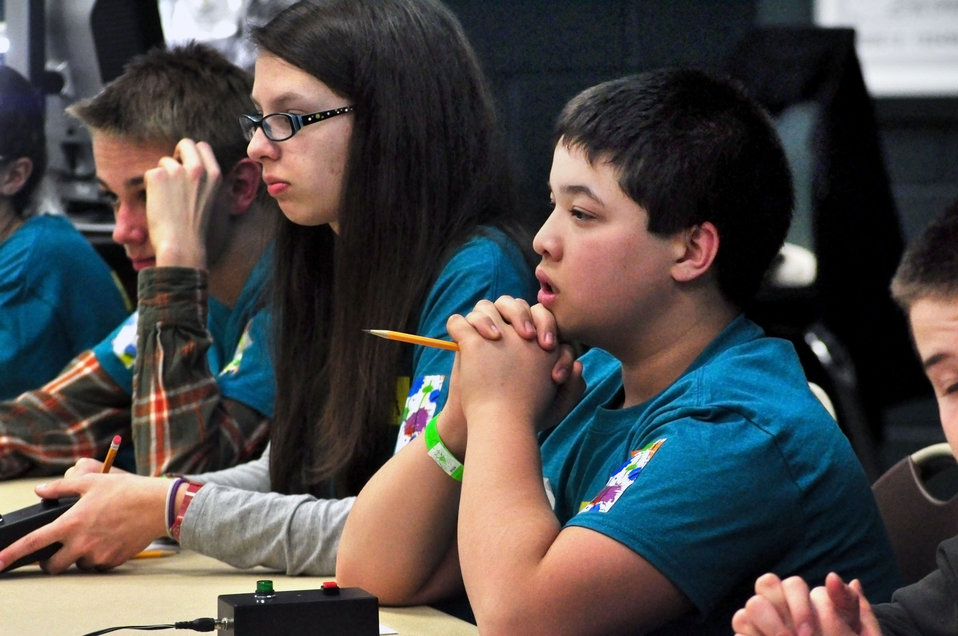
Blount Home Education Association Third Place DOE Middle School Science Bowl

14-017 DOE photo Lynn Freeny 2-1-2014 Oak Ridge Tennessee